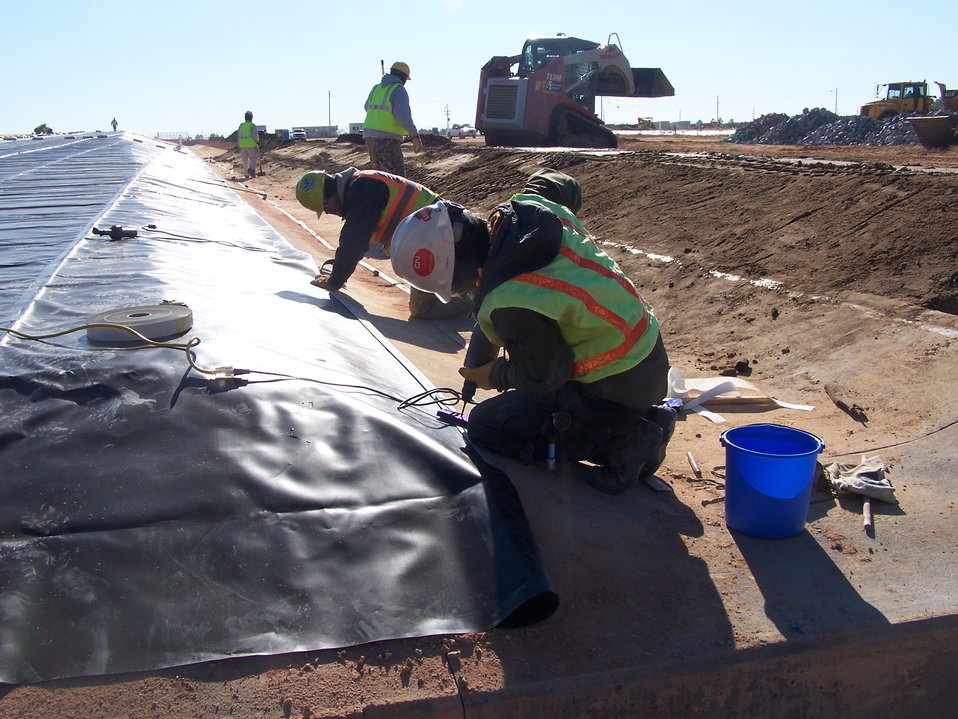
Recovery Act work at SRS